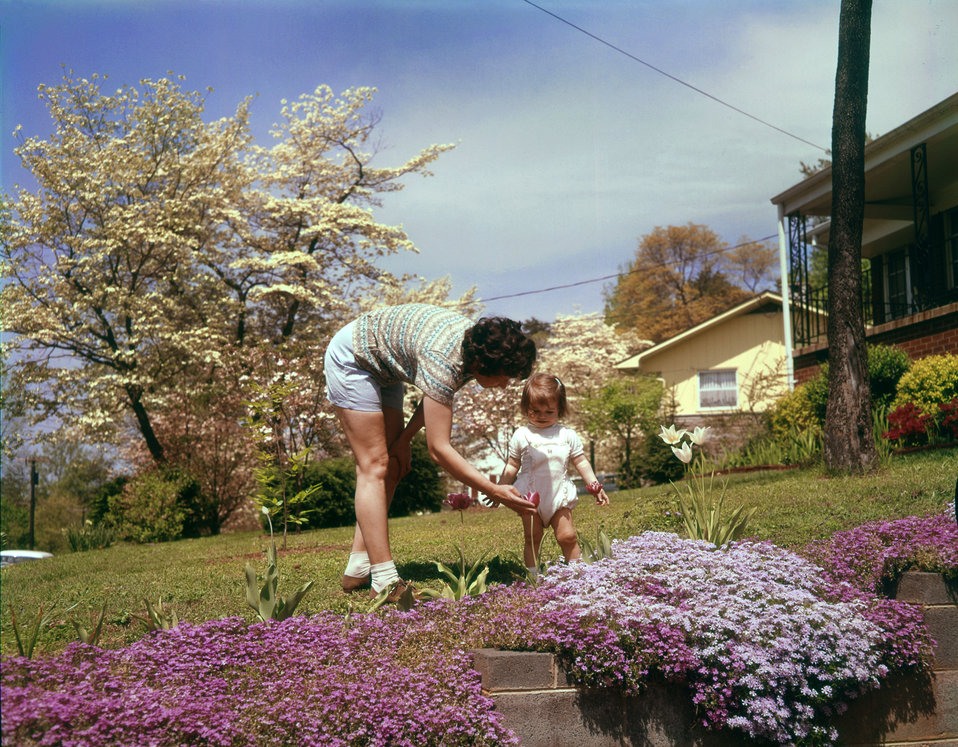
Mother Daughter Enjoying Spring in Oak Ridge

DOE photo Ed Westcott 1960s
Oak Ridge Tennessee